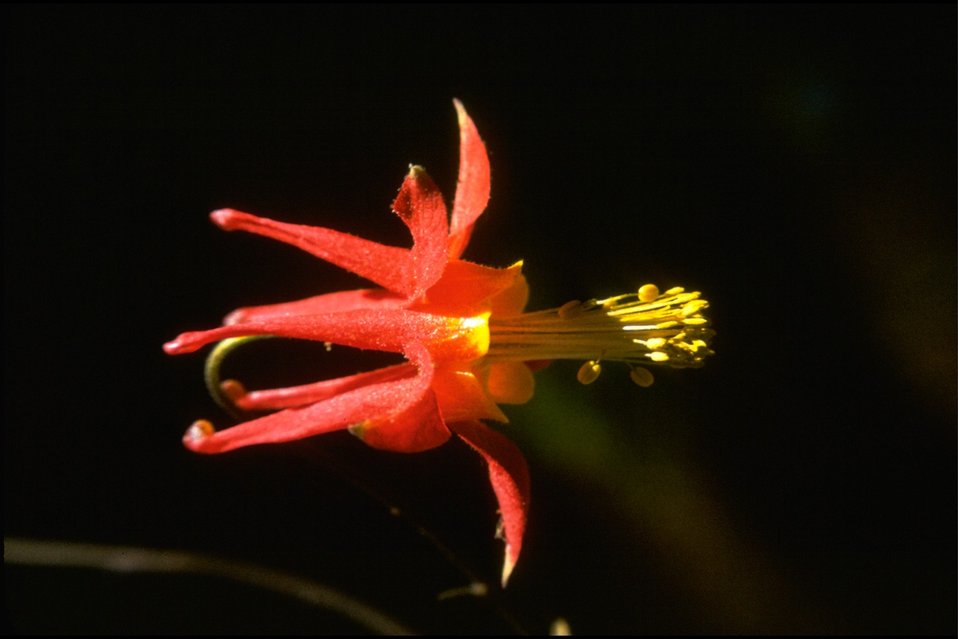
Rogue River - Rogue River Trail. Columbine flower (Aquilegia formosa).